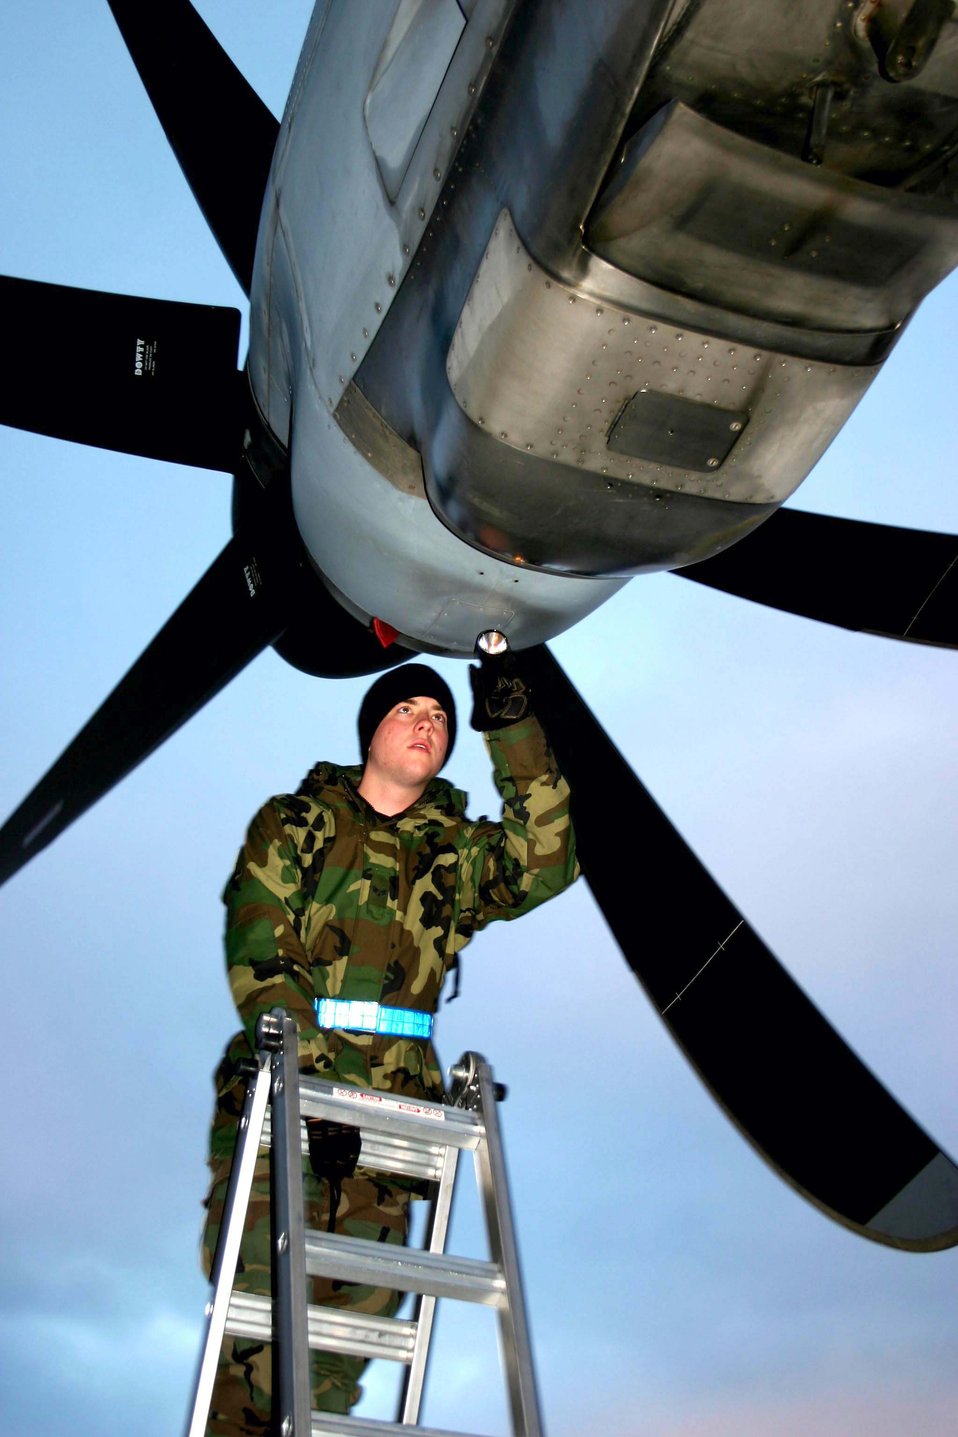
Hey 'J'

LITTLE ROCK AIR FORCE BASE, Ark. -- Senior Airman David Deutsh checks the intake of a C-130 Hercules J-model aircraft's propeller during a preflight inspection. Six Guard, Reserve and active-duty flying units are participating in a monthlong procedures, development and evaluation test of the C-130J. Airman Deutsh is a crew chief with the Air Force Reserve's 403rd Maintenance Squadron.